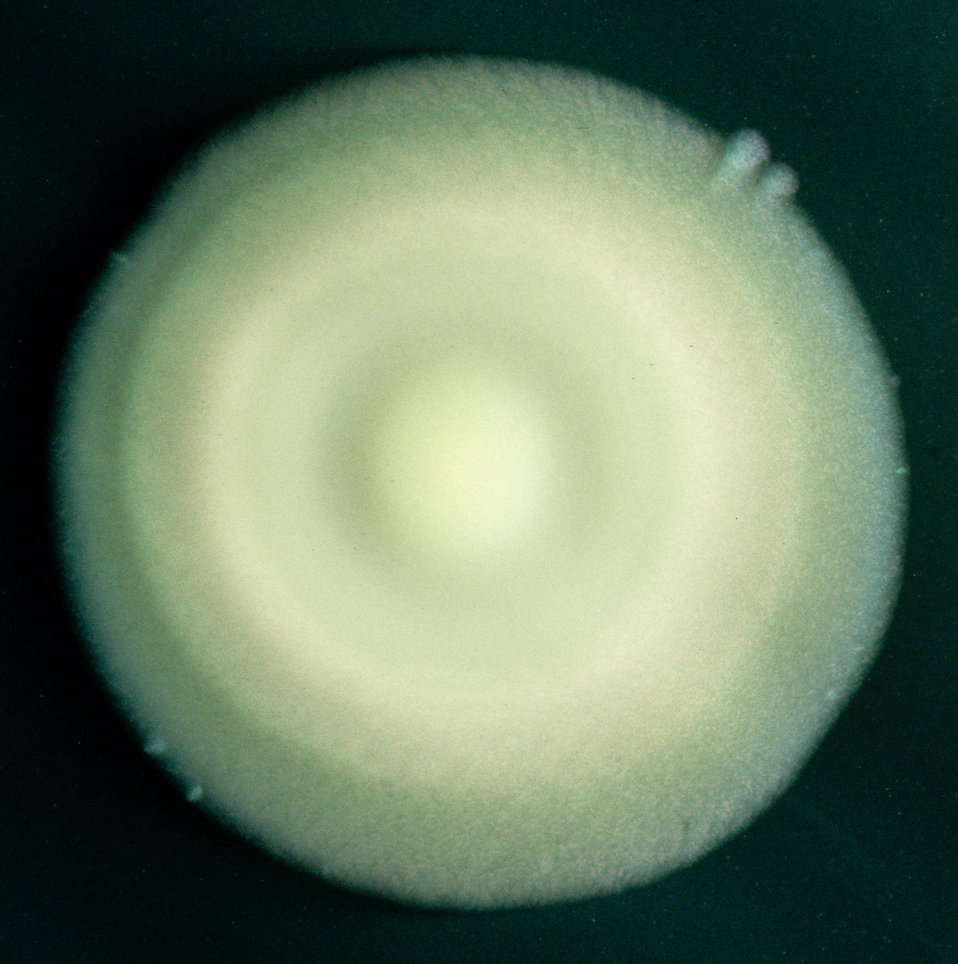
This 2005 photograph depicts an enlarged view of a single Legionella sp. colony, which had been cultured on an agar plate.